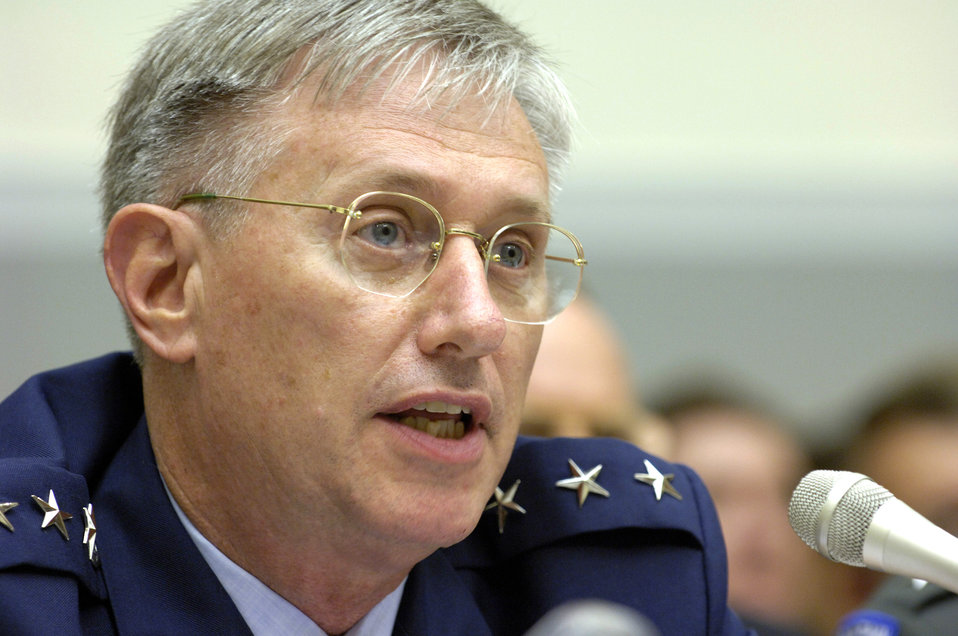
Reductions necessary to recapitalize today's service

Lt. Gen. Roger A. Brady answers questions during a hearing before the House Armed Services Committee in 2005. General Brady, Air Force deputy chief of staff for manpower and personnel, spoke at the 2006 Air Force Association Air and Space Conference in Washington, D.C., Sept. 26. He said reducing the number of Airmen in the service is never easy business, but it's absolutely necessary to recapitalize today's service.